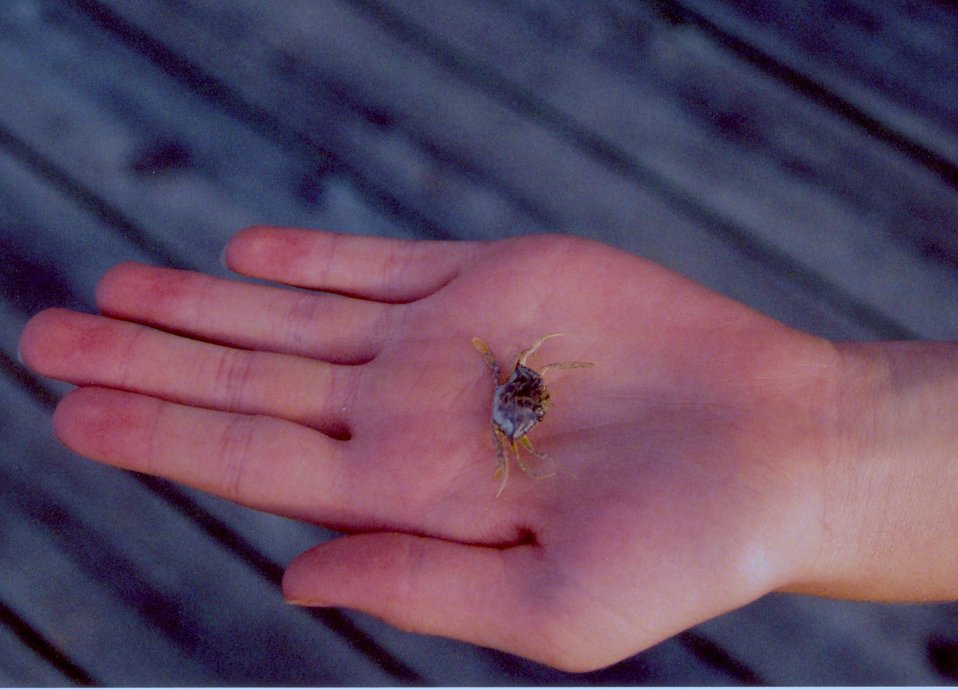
A baby blue crab.